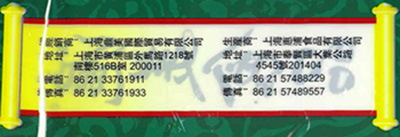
RECALLED – Humei Foods

February 4, 2014 – Product Recall – Humei Trading Inc. Issues Alert on Undeclared Sulfites in 'Dried Lily'.